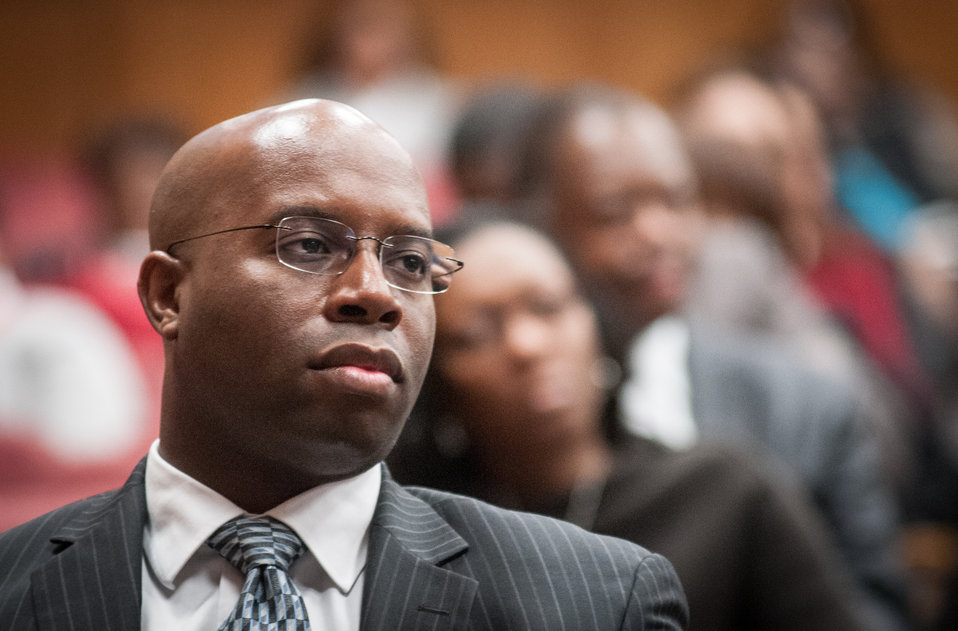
An U.S. Department of Agriculture (USDA) audience listen to the speakers, during the 2013 Women’s History Month Observance event, “Women Inspiring Innovation Through Imagination: Celebrating Women in Science, Technology, Engineering, and Mathematics, on Thursday, March 21, 2013, in Washington, D.C. The keynote speaker is American Association of University Women Executive Director and CEO Linda Hallman. Additional remarks were made by Agriculture Deputy Secretary Dr. Kathleen Merrigan; Rural Development Acting Deputy Under Secretary Judith Canales; Administration Deputy Assistant Secretary Deputy Assistant Secretary Robin Heard; and Agriculture Research Service National Programs Associate Administrator Dr. Chavonda Jacobs-Young.